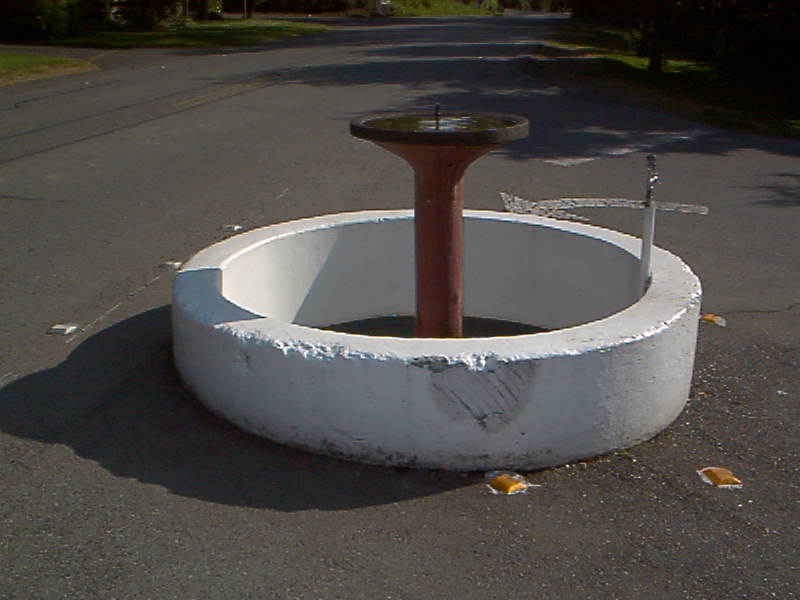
Yarrow Point Water Fountain